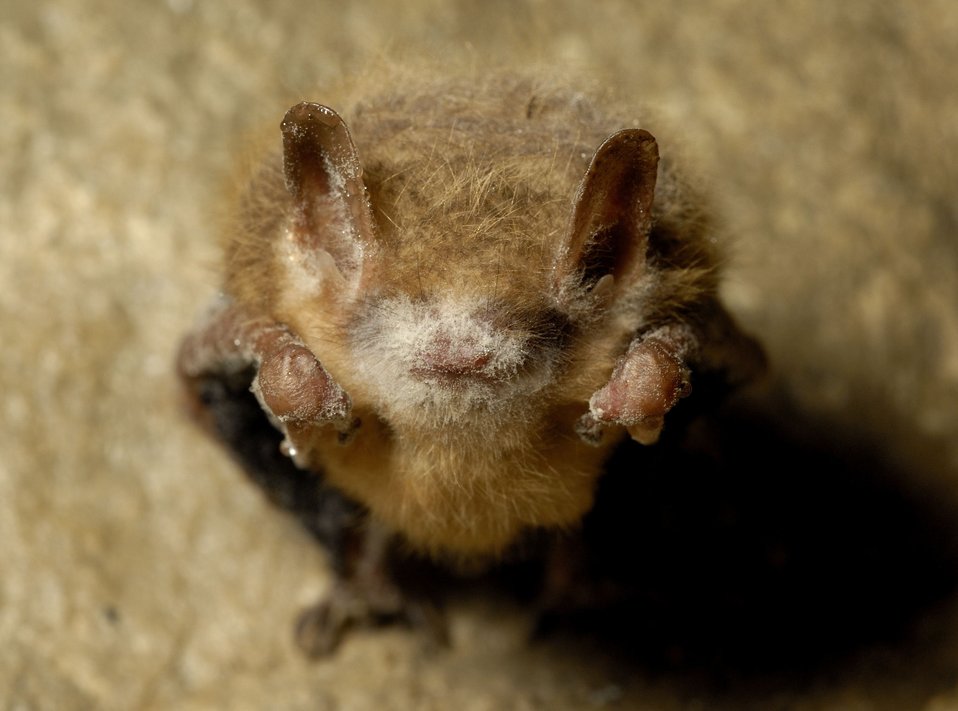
Tri-colored bat with visible symptoms of WNS, Cloudland Canyon State Park, Georgia